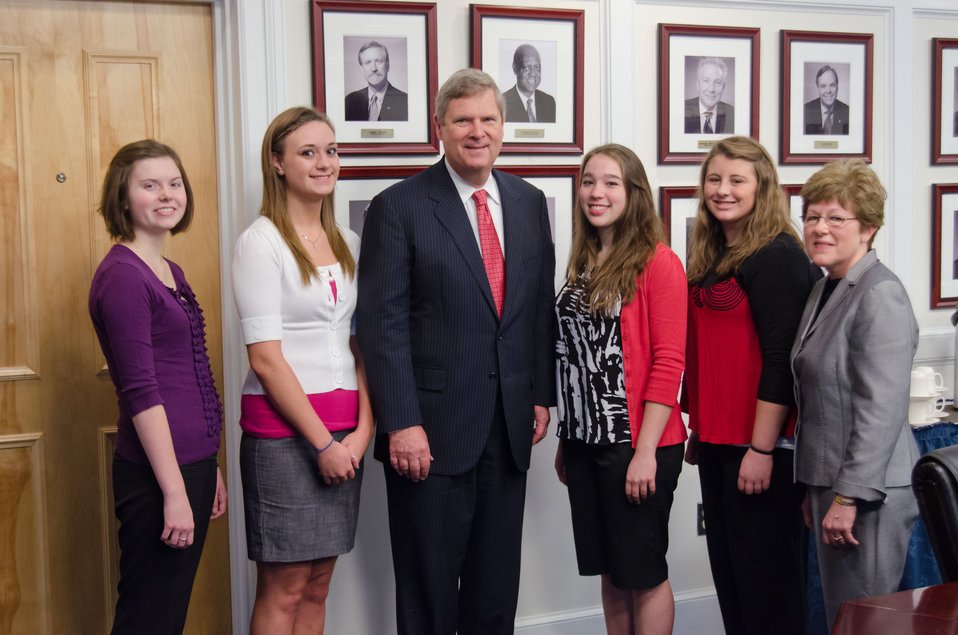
Agriculture Secretary Tom Vilsack poses for a group photo with 4-H members (l to R) Abigail Peterson, Savannah Ruby, Amy Prestholt, Kayla Krull and Iowa State University Extension and Outreach youth program specialist Carol Ehlers at the National 4-H Youth Center in Chevy Chase, MD, on Monday, March 26, 2012.